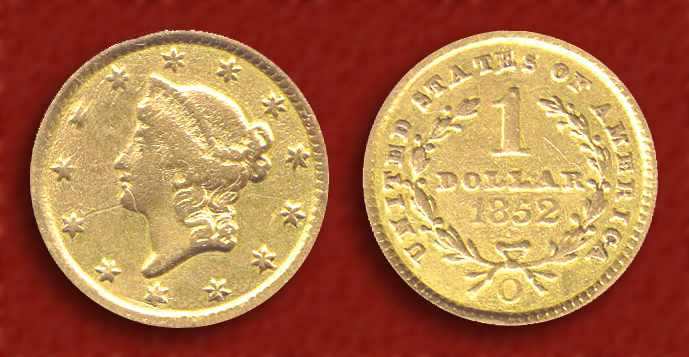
$1 US 'Liberty Head' Gold coin minted at New Orleans, Louisana (Mint mark 'O') in 1852.